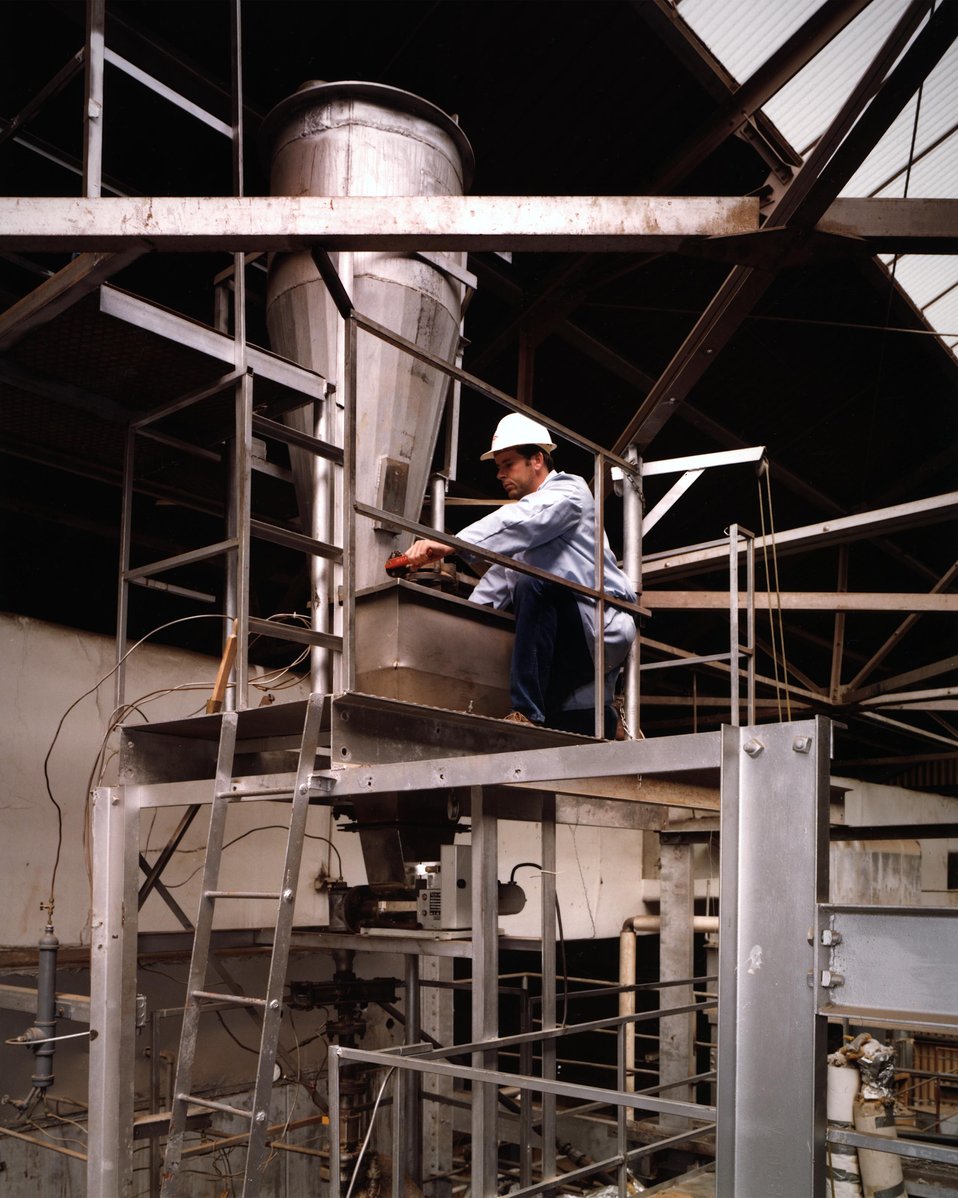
THE FEED SYSTEM FOR THE SGFM PILOT PLANT.

THIS PROJECT ENTAILS CONDUCTING STUDIES IN AN EXISTING ONE- HALF TON PER-DAY TEST REACTOR, UTILIZING ANIMAL MANURES AND OTHER BIOMASS MATERIALS AS FEED STOCKS, TO DETERMINE THE INFLUENCE OF TEMPERATURE, RESIDENCE TIME, PRESSURE, AND FEED STOCK MATERIALS ON THE YIELD AND QUALITY OF THE PROCESS.THE FEED SYSTEM HAS A FEED HOPPER AND VARIABLE SPEED SCREW WHICH IS USED TO CONTROL THE FEED RATE OF BIOMASS ENTERING THE REACTOR.